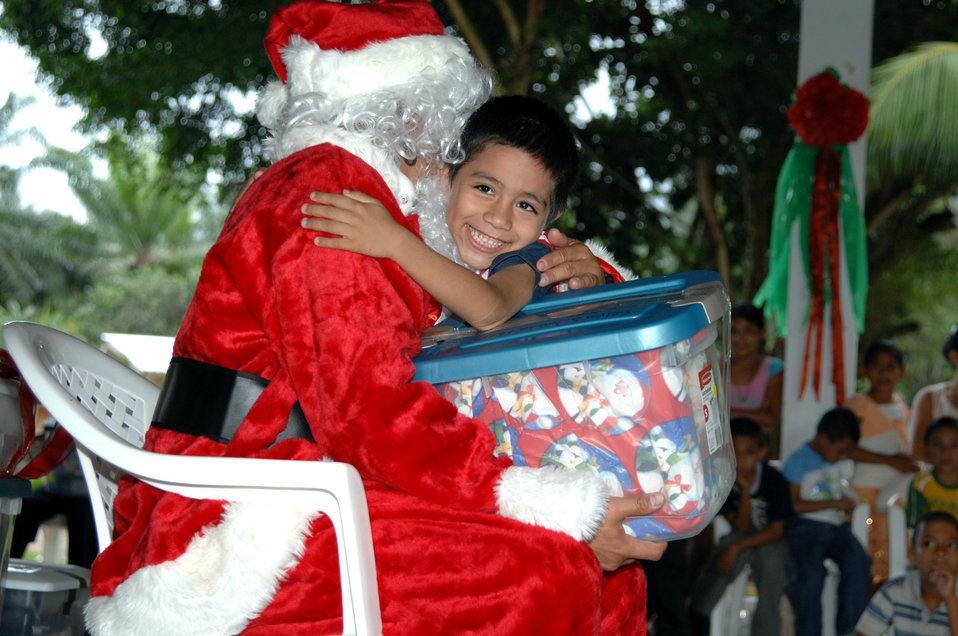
Santa pays an early visit

Santa Claus gets a hug from one of the children at the Aldea Infantil S.O.S orphanage in La Ceiba, Honduras, during